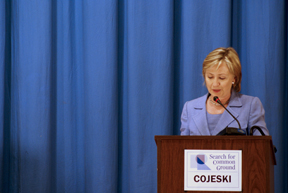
Secretary Clinton Conducts Town Hall Meeting With Congolese Students

U.S. Secretary of State Hillary Rodham Clinton conducts a town hall meeting with Search for Common Ground and Congolese University Students August 10, 2009 in Kinshasa, Democratic Republic of the Congo.